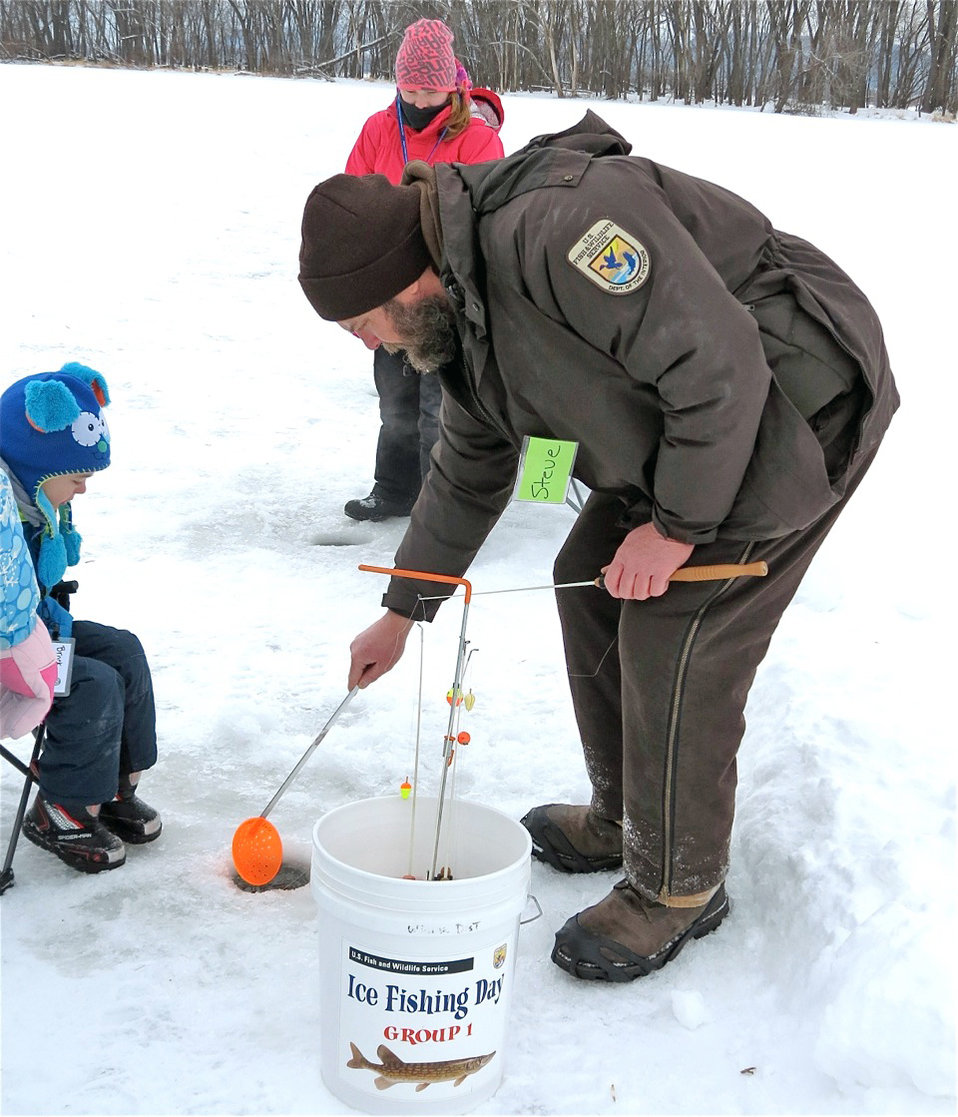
Expert Hand

Wildlife Biologist Stephen Winter clears ice from a hole for a young angler at the annual youth ice fishing event held on the Upper Mississippi River National Wildlife and Fish Refuge – Winona District.